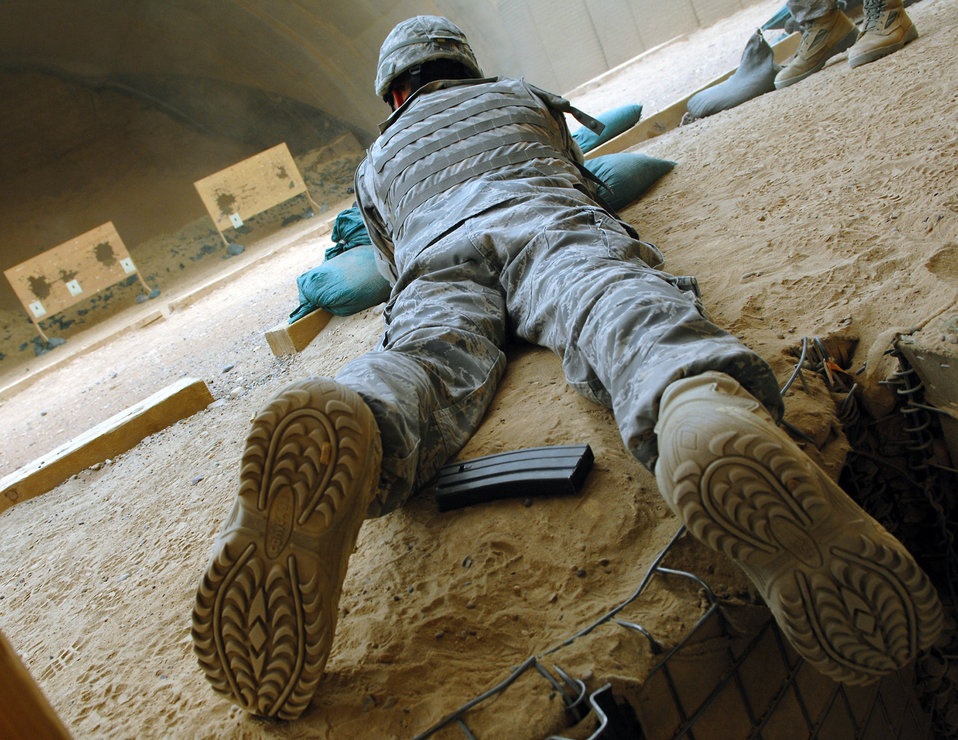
Zeroing in

Airman 1st Class Darryl Worthey aims at a target with an M-4 during familiarization training at the range April 30 at Balad Air Base, Iraq. Security force is an integral part of base defense and the Airmen practice every day to maintain readiness. Airman Worthey is assigned to the 332nd Expeditionary Security Forces Squraon and deployed from Mountain Home Air Force Base, Idaho.